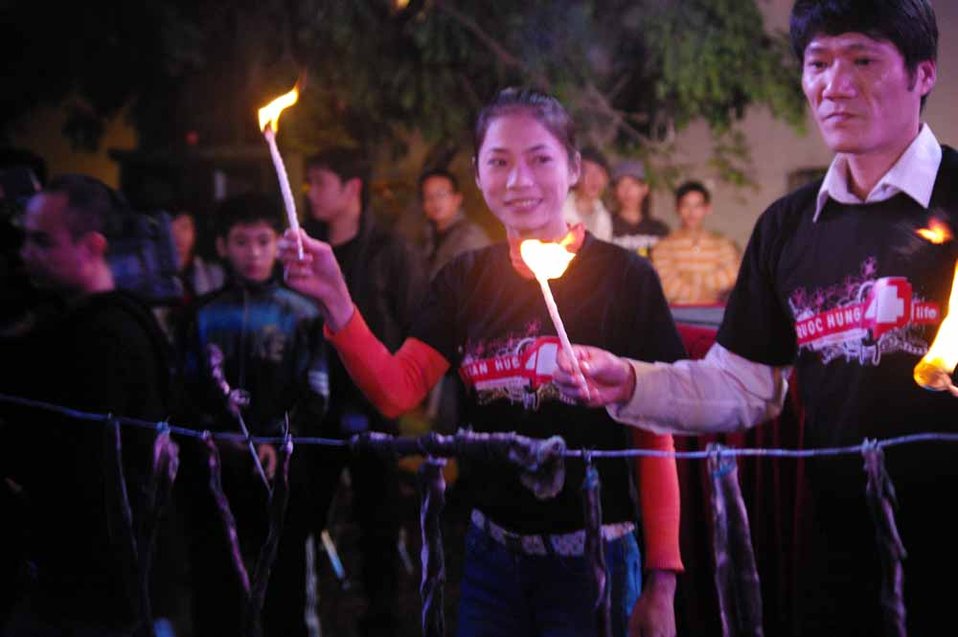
dance4life, Hanoi